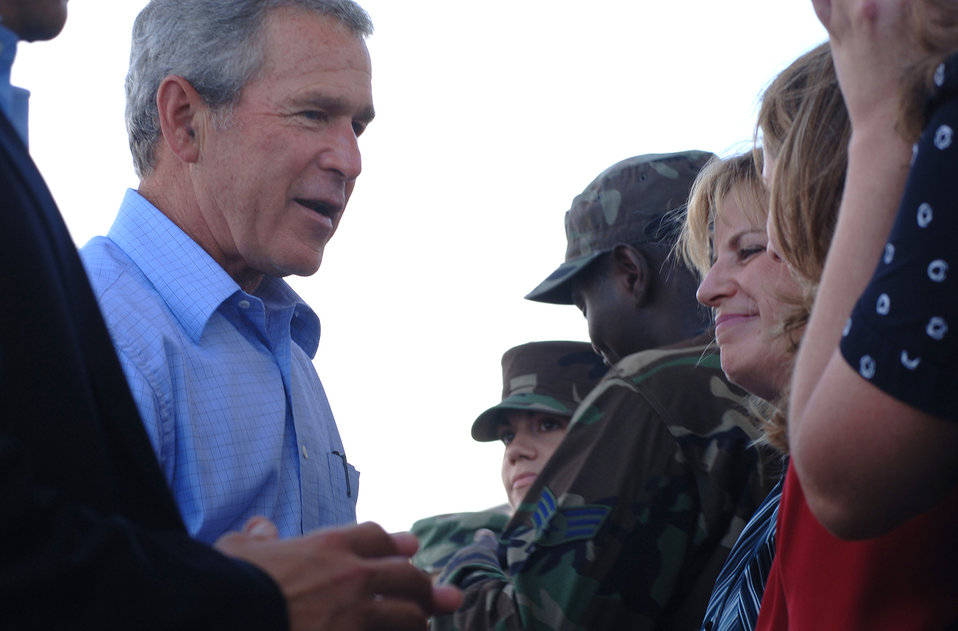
President Bush visits Keesler

Janet Ladner meets President George W. Bush during a stop at Keesler Air Force Base, Miss., today. The president met Airmen and civilians from Keesler AFB during his visit to the Gulfport region in Mississippi to view the area devastated by Hurricane Katrina one year ago. Ms. Ladner is with the 2nd Air Force.